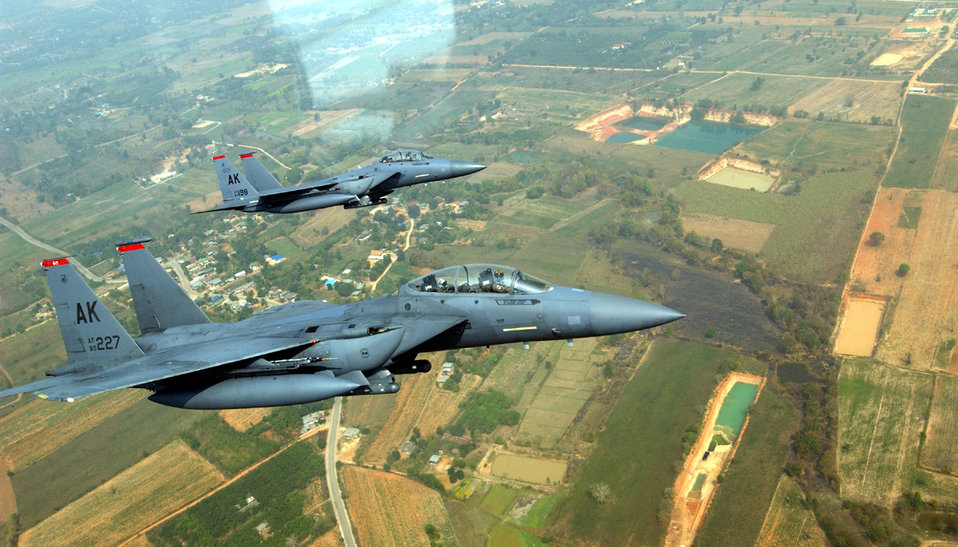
Cope Tiger '04

KORAT ROYAL AIR FORCE BASE, Thailand -- Two F-15E Strike Eagles from the 90th Fighter Squadron at Elmendorf Air Force Base, Alaska, fly in a Cope Tiger '04 exercise mission. Strike Eagles are participating for the first time in the 10-year history of the exercise.